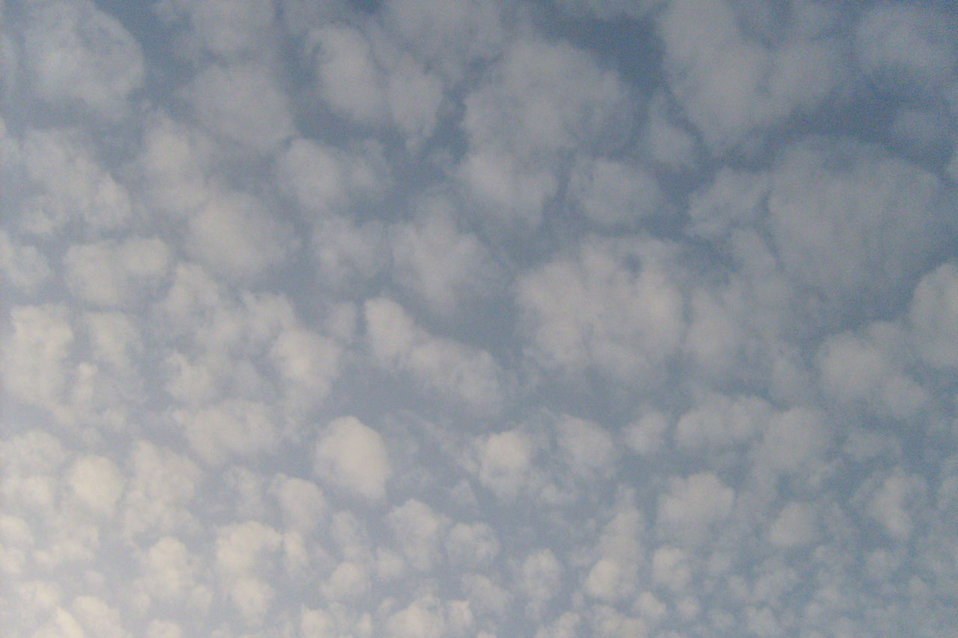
Clouds in the sky.